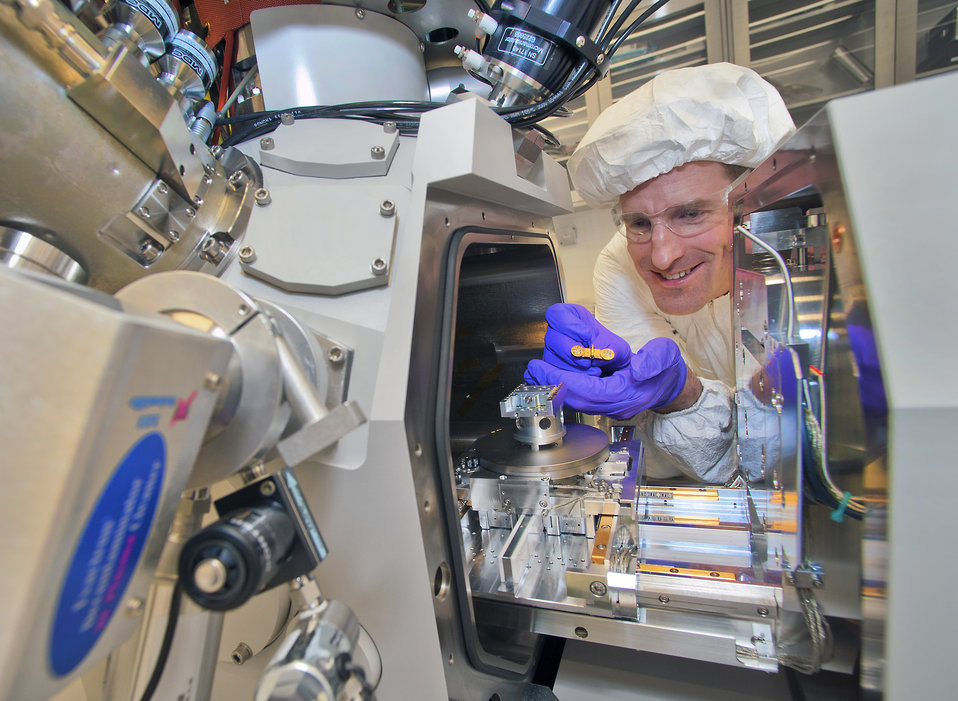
Using state-of-the-art transmission electron microscopes (TEMs), researchers at the Brookhaven National Laboratory Center for Functional Nanomaterials take images of specimens that can be as small as a few billionths of a meter in size-so small that their atomic structure and chemistry are revealed. Materials scientists use this information to develop new nanotechnologies and pursue answers to fundamental energy challenges.